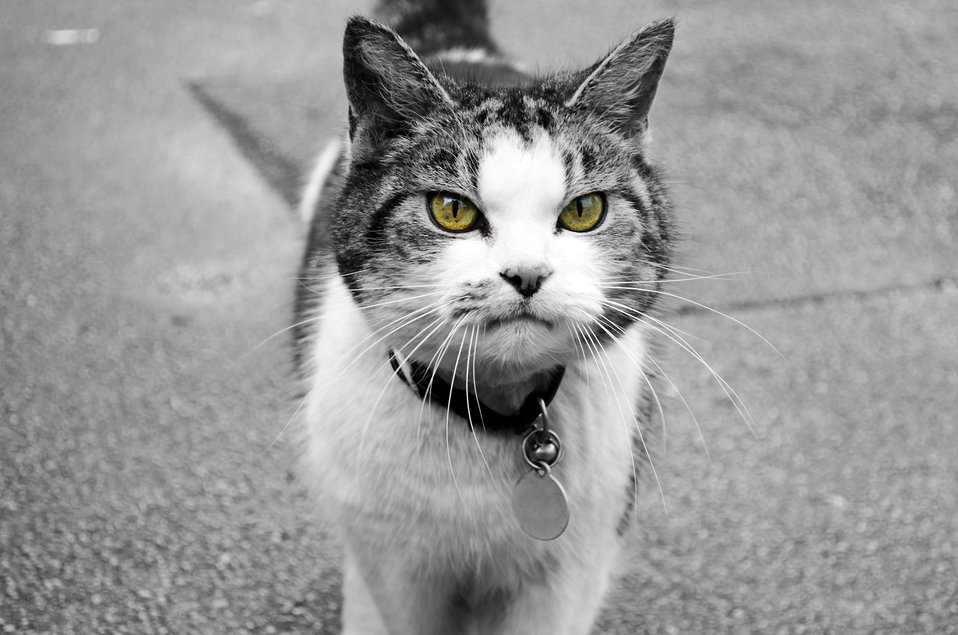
Cat - background.